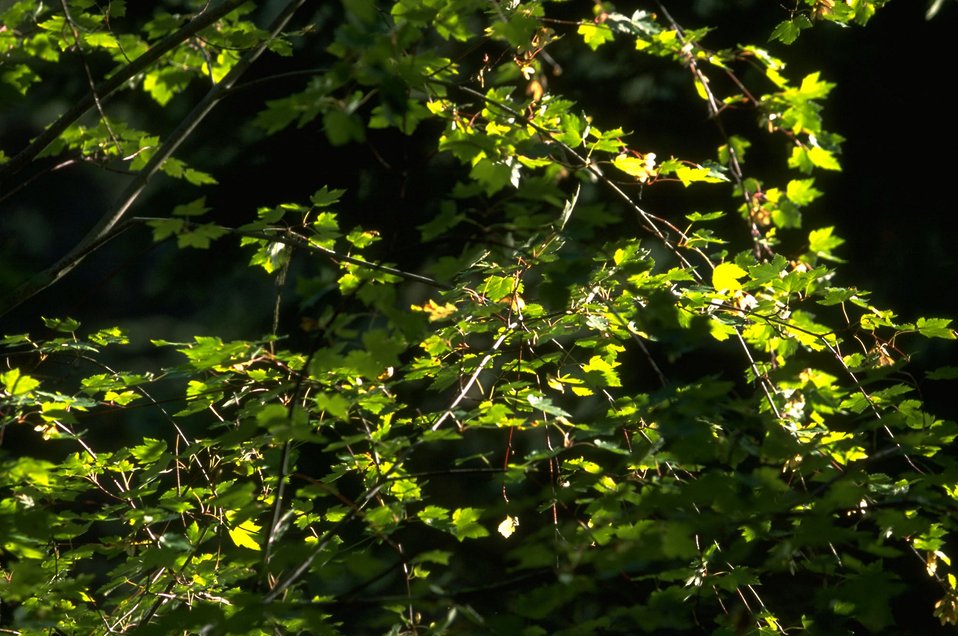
Closeup of mountian maple